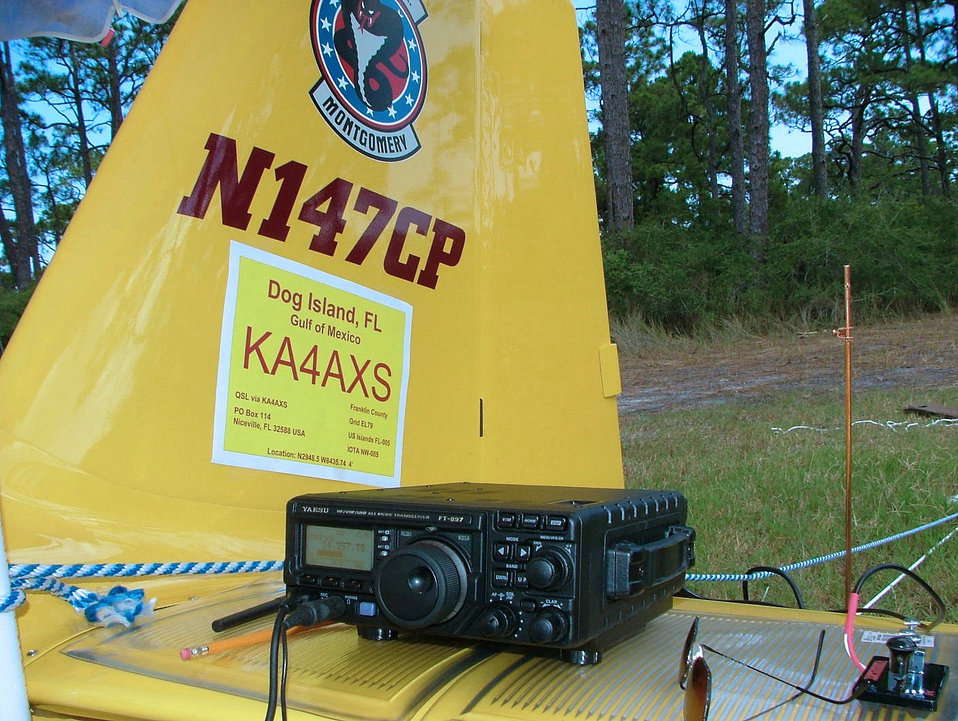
Airman flies to Dog Island to test radio communication

DOG ISLAND, Fla. -- Lt. Col. Edward Linch's radio rests on the wing of his experimental aircraft before being used in Field Day 2005. The nationwide event is held by the American Radio Relay League to link amateur stations with federal, state and local disaster relief agencies. Colonel Linch flew his private plane here -- an island with no permanent residents or formal airfield -- establishing a link to 36 other operators during extremely poor atmospheric conditions. He is the wing plans chief of the 505th Command and Control Wing at nearby Hurlburt Field.